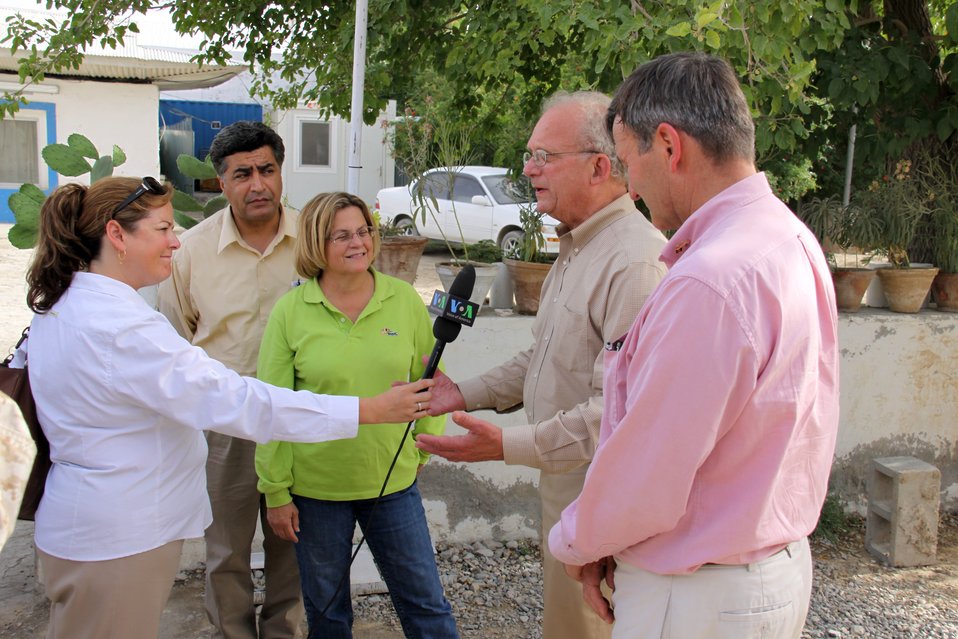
Meeting with Local Leaders in Kandahar